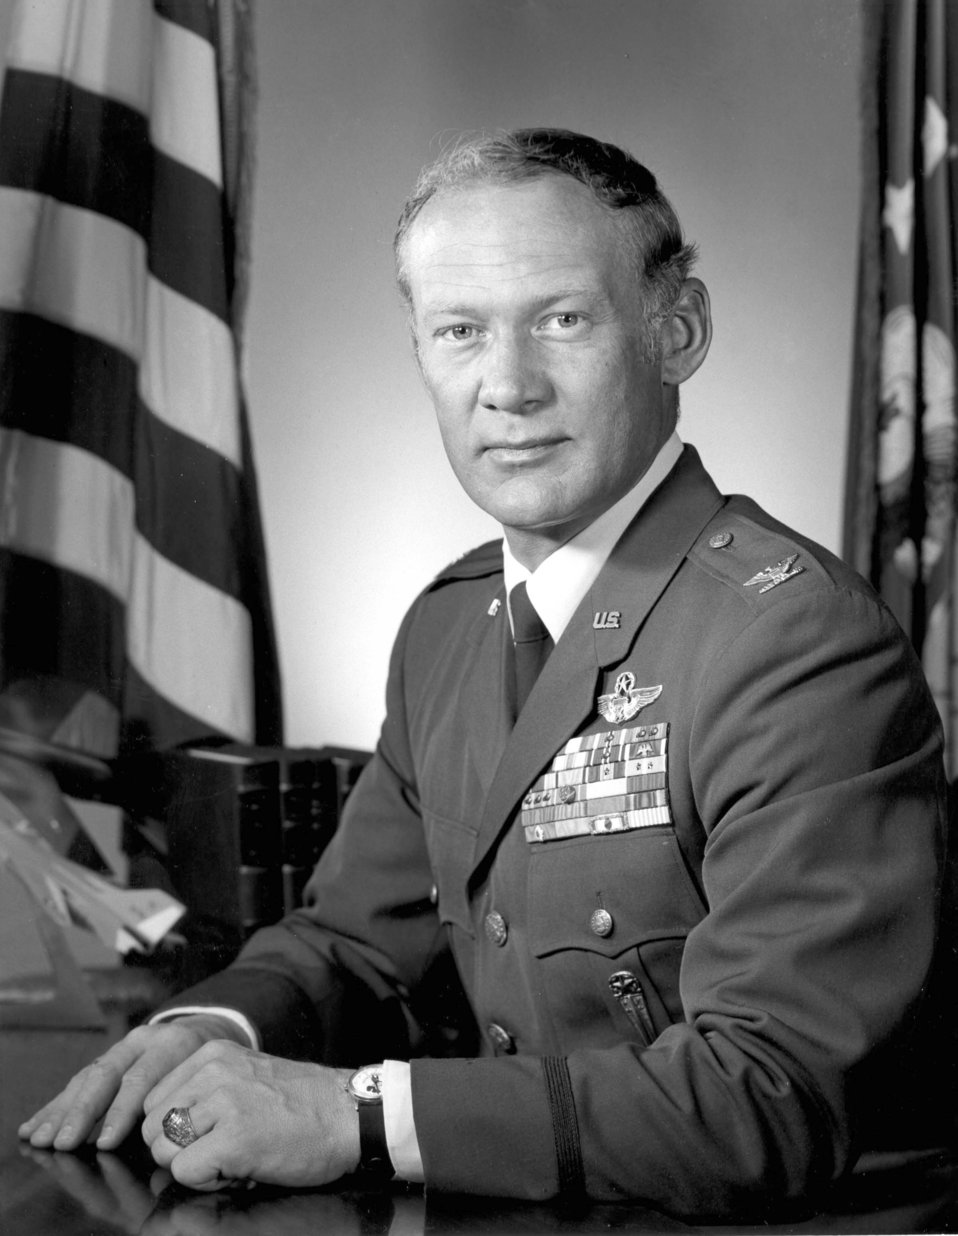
Edwin E. Buzz Aldrin, Jr.

1960'S -- Col. Edwin E.